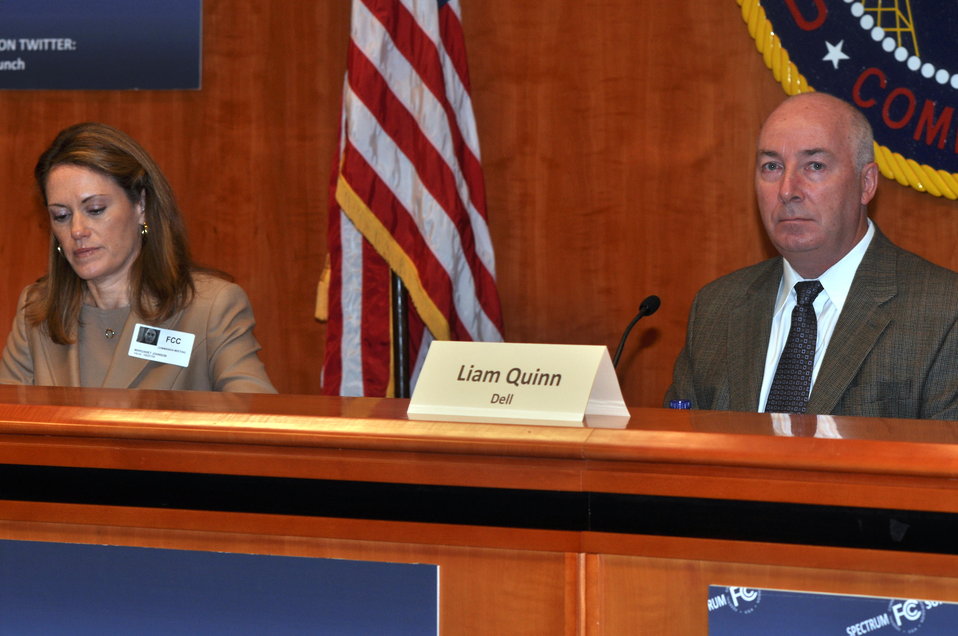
Spectrum Summit